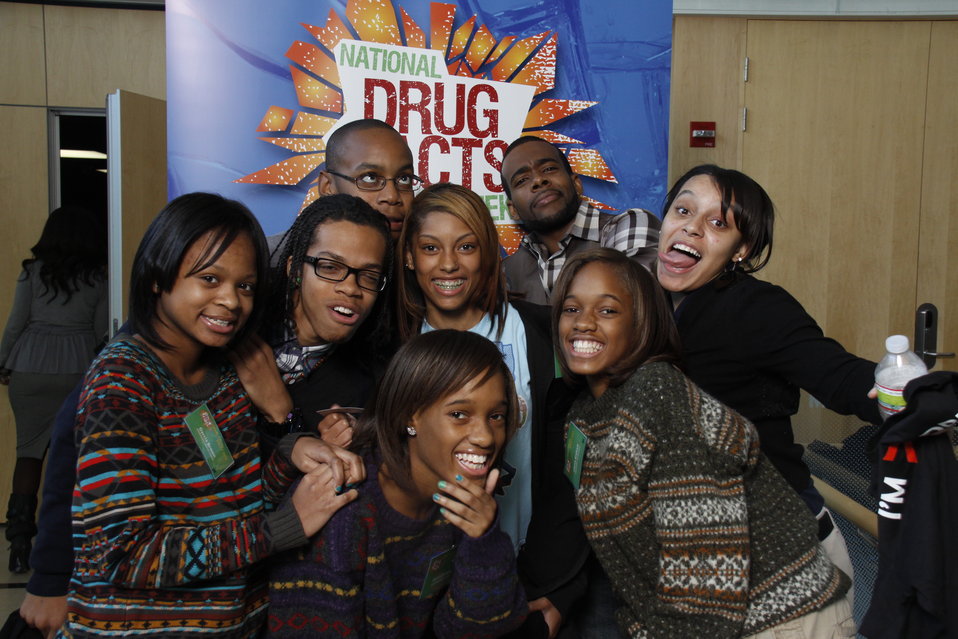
NDFW Mentor Event